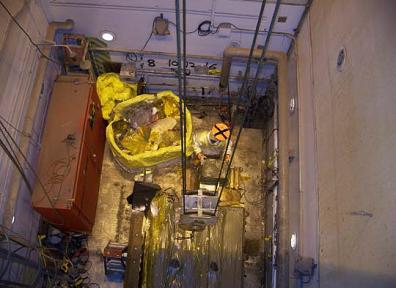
Recovery Act accelerated cleanup

A member of SRS’s legacy transuranic waste repackaging team dismantles a glove box at H Canyon.